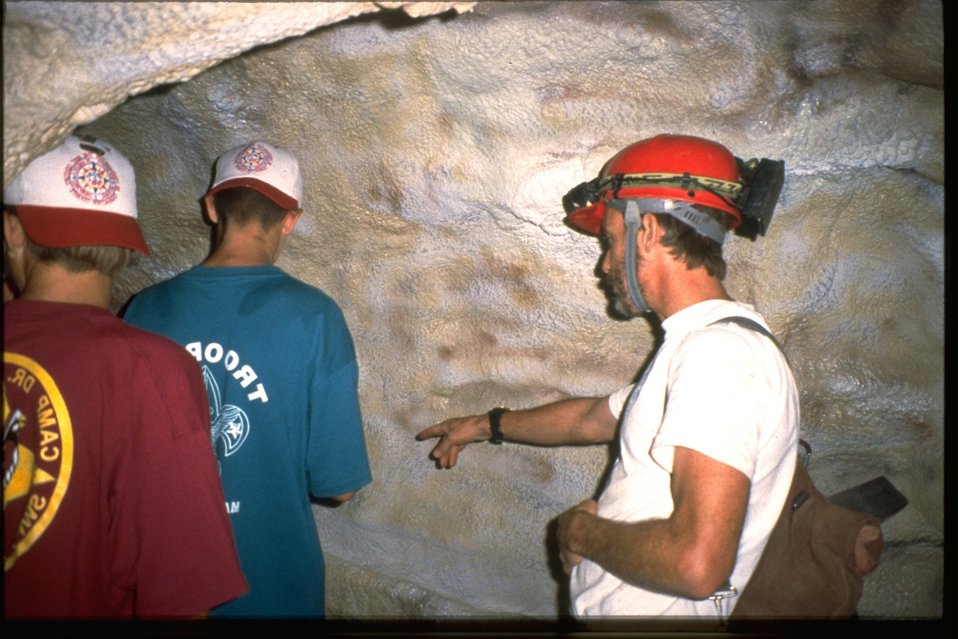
Boy Scouts National Jamboree: BLM caves exhibit.